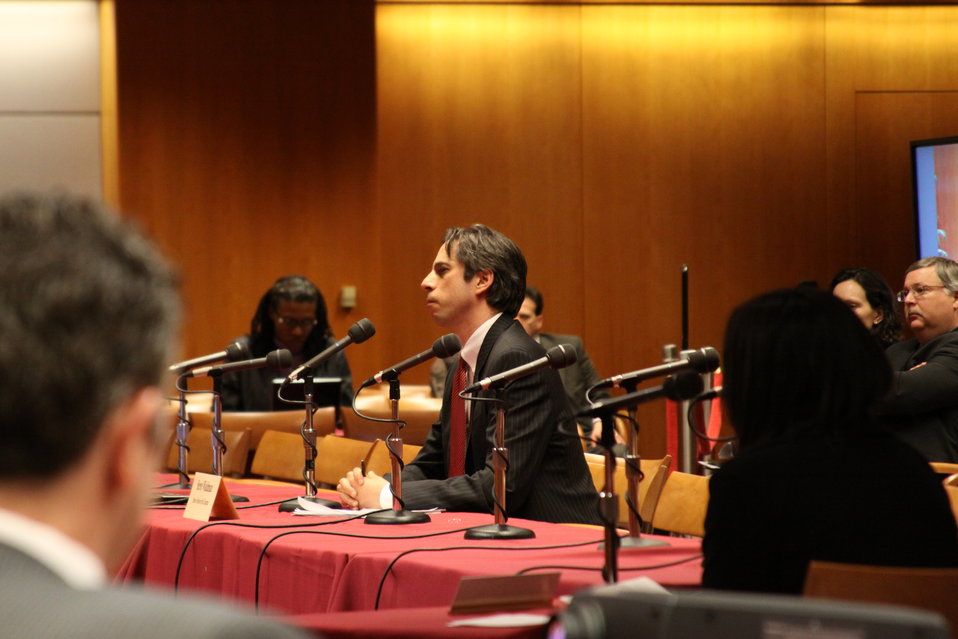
Open Commission Meeting - 2/18/2010

The Federal Communications Commission will hold an Open Meeting in Washington, DC. on February 18, 2010, which will include the following items:

E-Rate: An Order and Notice of Proposed Rulemaking to enable schools that receive funding from the E-Rate program to allow members of the general public to use the schools' Internet access during non-operating hours at no additional cost to the Universal Service Fund. This order and notice do not permit or require any changes to E-Rate applications due on February 11, 2010; Ex Parte Reform: A Notice of Proposed Rulemaking to improve the transparency and effectiveness of the FCC's decision-making process by reforming the ex parte rules; Procedural Reform: A Notice of Proposed Rulemaking to enhance the efficiency, openness, and transparency of the Commission's proceedings by improving and modernizing certain organizational and procedural rules; National Broadband Plan Status Report: Commission staff will report on the status of the National Broadband Plan, providing a framework for the national purposes portion of the Plan.